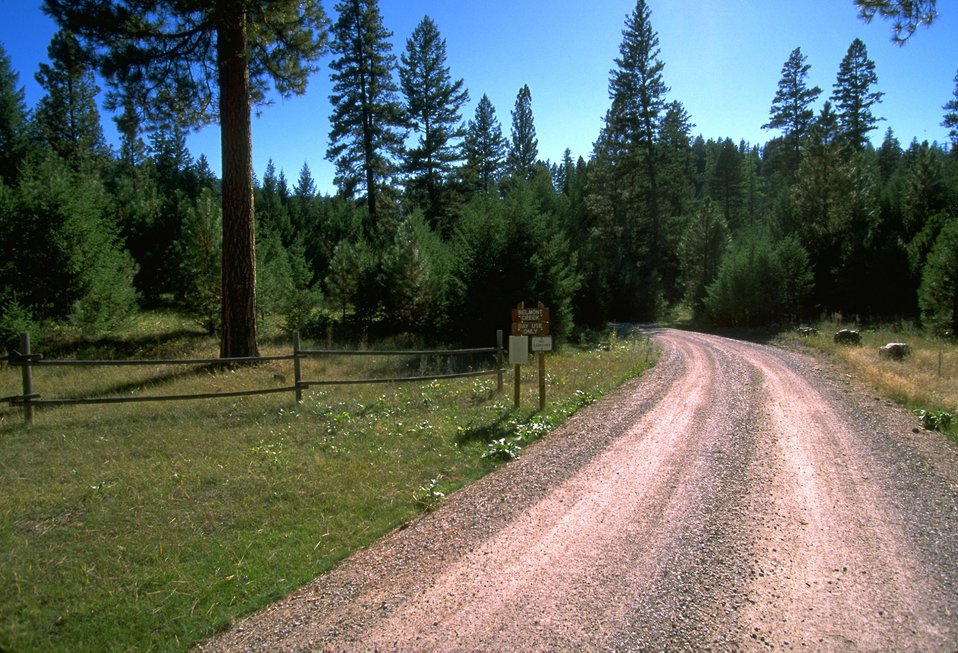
McNamera Road with Red Rocks day use area sign (Blackfoot River)